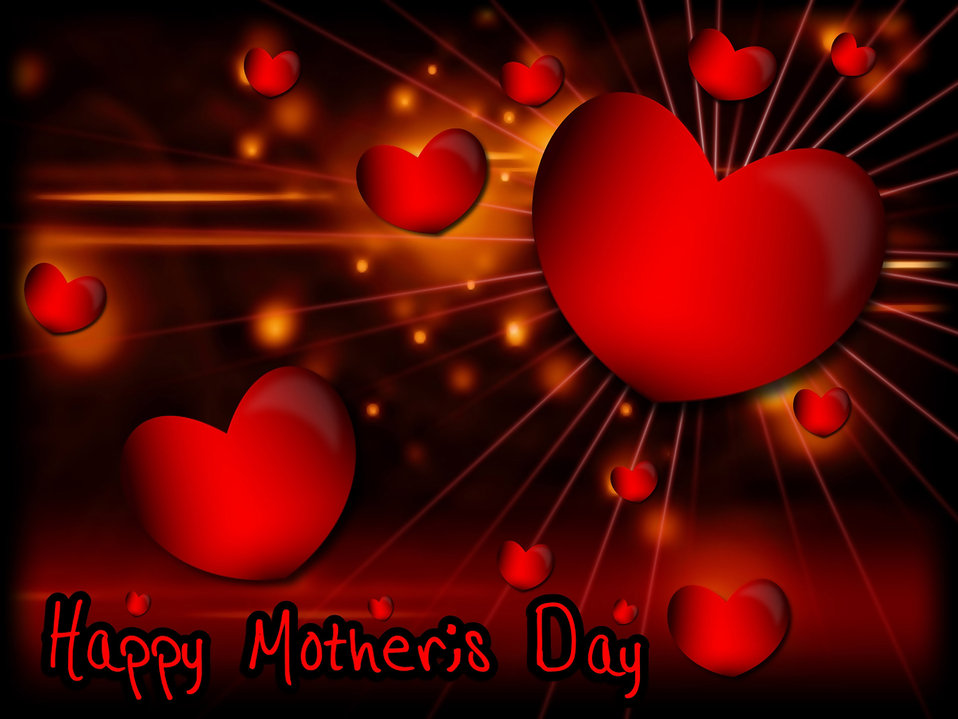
Mother's day

I love you from my heart!.